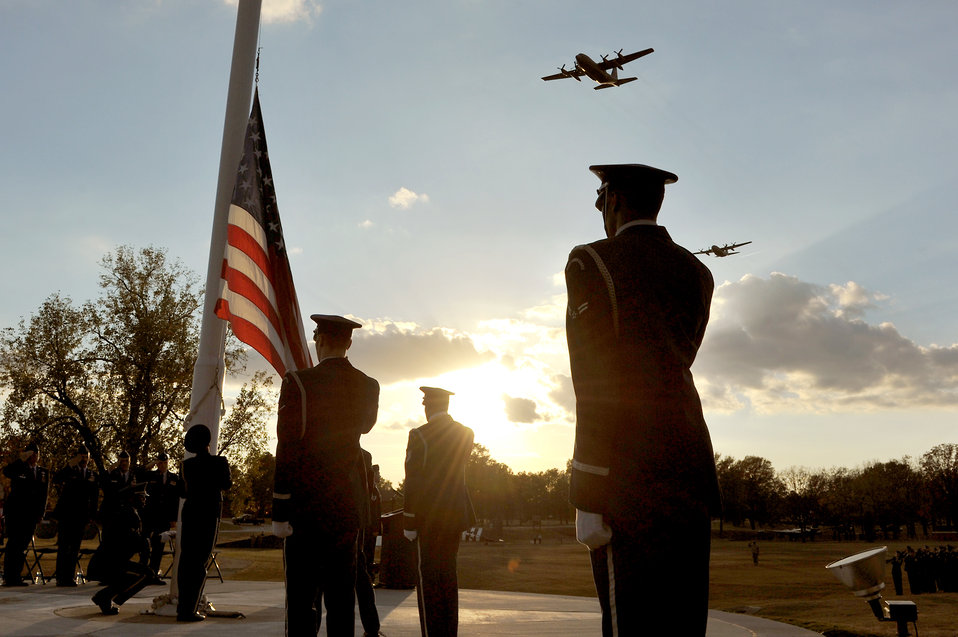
Veterans Day retreat ceremony

A C-130 Hercules flies over the Veterans Day retreat ceremony Nov. 10, 2010, at Little Rock Air Force Base, Ark.